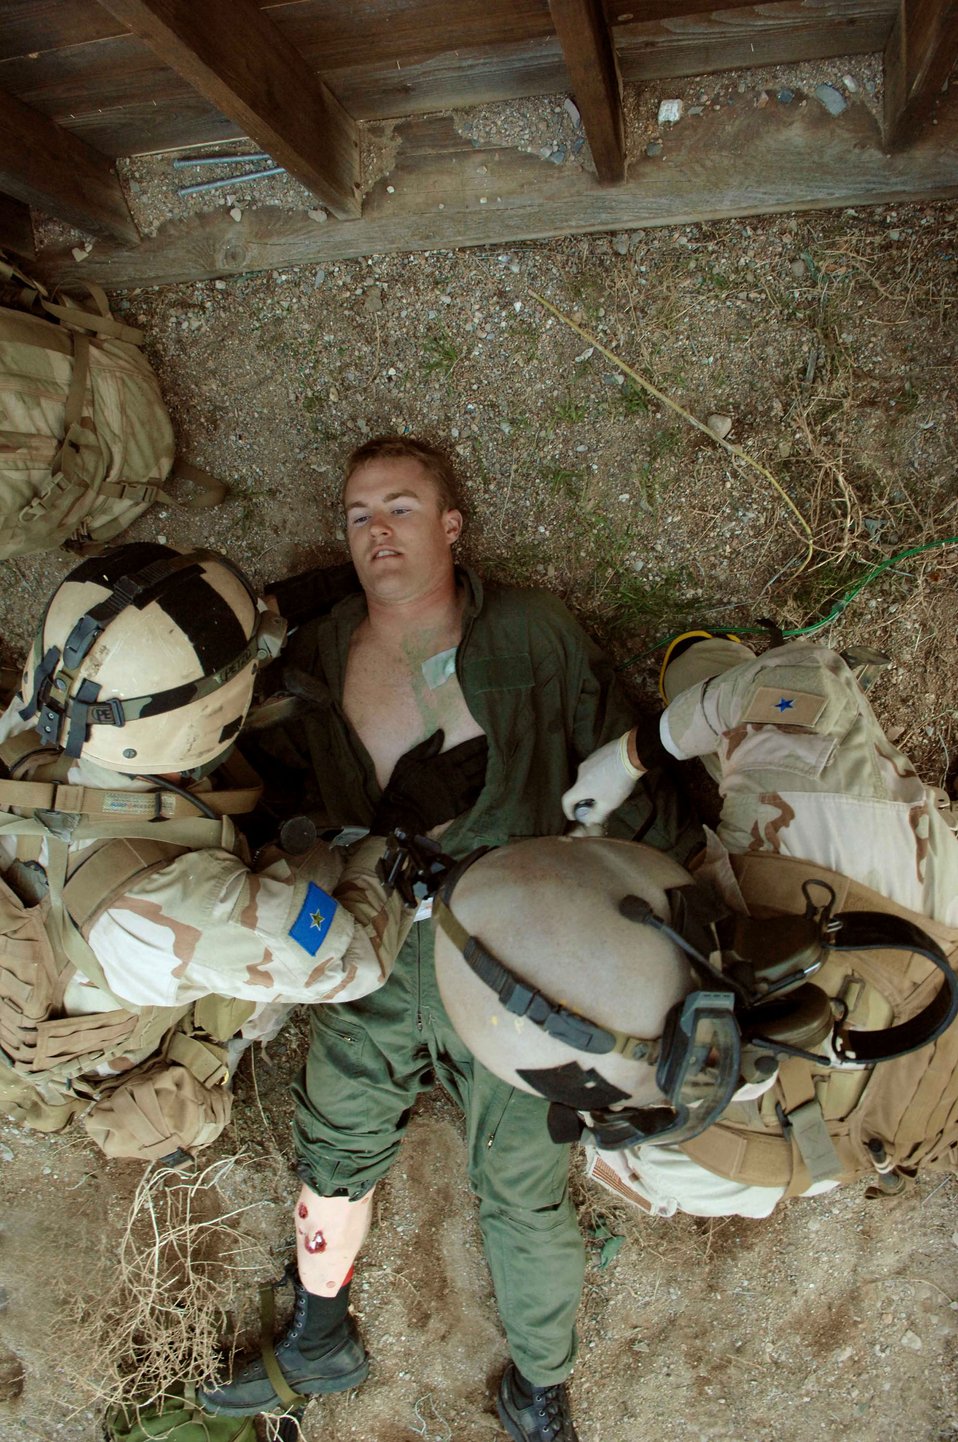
Combat search and rescue training in Utah

Pararescuemen provide medical care to a simulated downed pilot during a combat search and rescue integration exercise Nov. 8 at Camp Williams, Utah. The pararescuemen are from the 58th Rescue Squadron, Nellis Air Force Base, Nev. Members of the 34th Weapons Squadron from Nellis AFB led the search and recovery training. The exercise expanded the integration with Utah's 211th Aviation Group AH-64 Apache Joint Rotary Wing, 4th Fighter Squadron F-16 Fighting Falcon assets from Hill AFB, Utah, and special operations forces. Exercise participants also conducted extensive joint combat search and rescue operations against surface-to-air threats. The exercise is being run held Nov. 6 through 15.